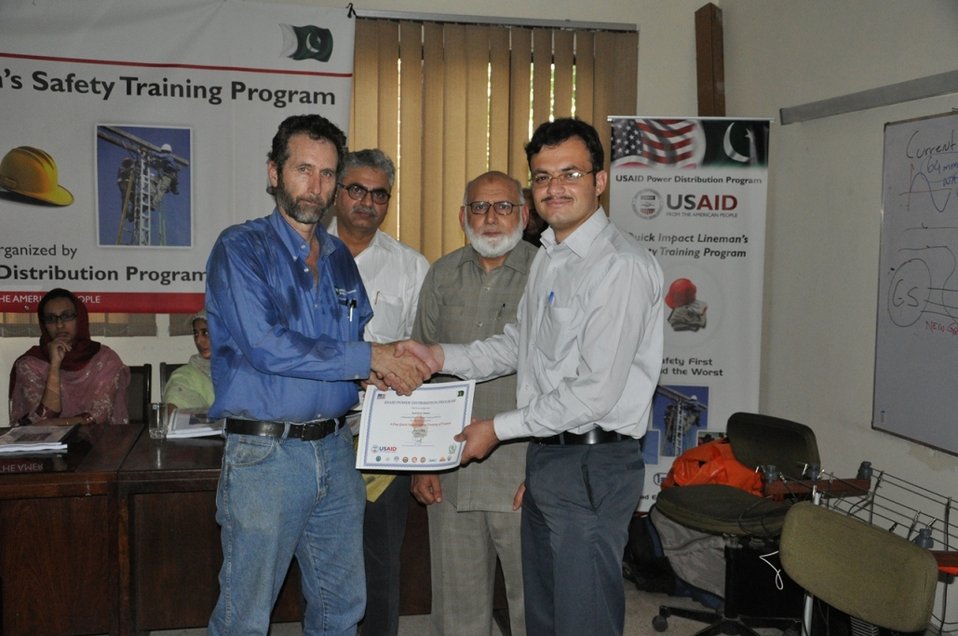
Quick Impact Safety Training Program at Wapda Staff College

Islamabad, May 21, 2012: The United States Government through the United States Agency for International Development (USAID) “Quick Impact Lineman Training Program” will help in save thousands of linemen in Pakistan. At the concluding session of today’s training program held at the WAPDA Staff College, the deputy chief of party of USAID’s Power Distribution Program officially handed over linemen safety tools to distribution companies including the Islamabad Electric Supply Company (IESCO), Multan Electric Power Company (MEPCO), and Hyderabad Electric Supply Company (HESCO). USAID has provided safety trainings to over 415 linemen and will provide training to thousands more in the coming months.